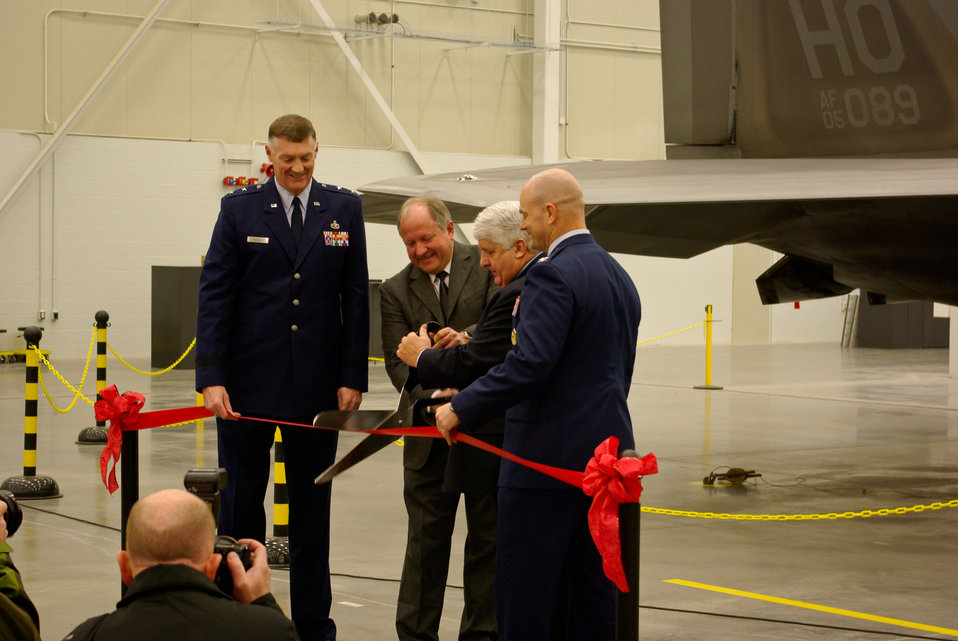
F-22 heavy maintenance facility at Hill Air Force Base

(From left to right) U.S. Air Force Maj. Gen. Andrew Busch, commander of the Ogden Air Logistics Center; Dale Satterthwaite, senior vice president for Big-D Construction; U.S. Rep. Rob Bishop; and U.S. Air Force Col. Allan Day, commander of the 309th Maintenance Wing, cut the ribbon officially opening the new F-22 heavy maintenance facility during a ceremony Jan. 12, 2012 at Hill Air Force Base, Utah. The U.S. Army Corps of Engineers Sacramento District oversaw construction of the 96,000 square foot facility.